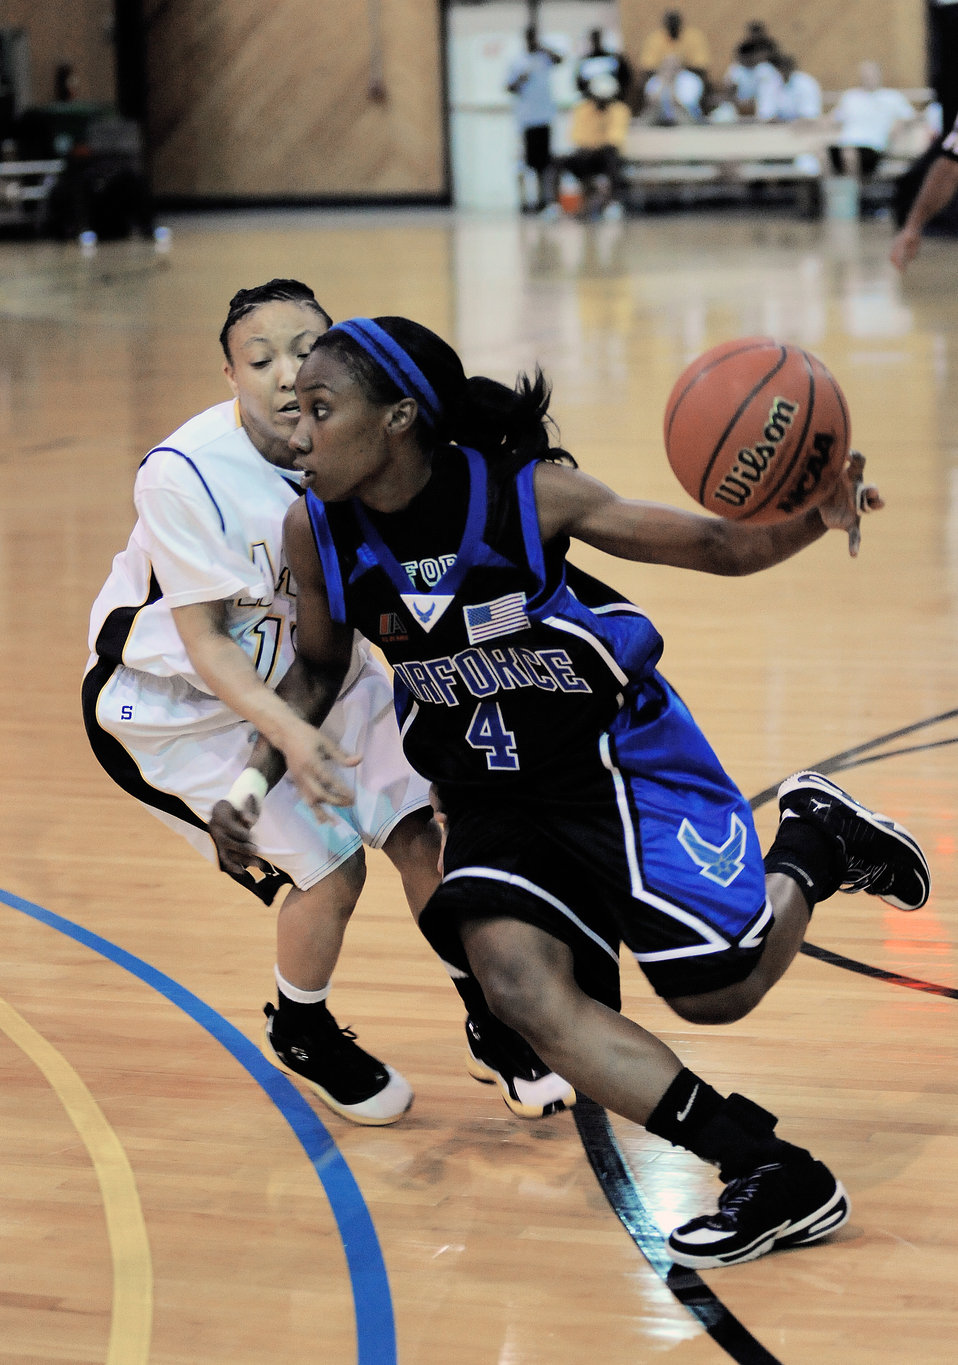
Armed Forces Basketball Championship

Second Lt. Monica Mason, from Tyndall Air Force Base, Fla., dribbles around an opponent during a basketball game against the Army. The Air Force women beat the Army team 58-52 in the first round of games for the Armed Forces Basketball Championship in Millington, Tenn. The tournament will run from May 12th through the 17th.